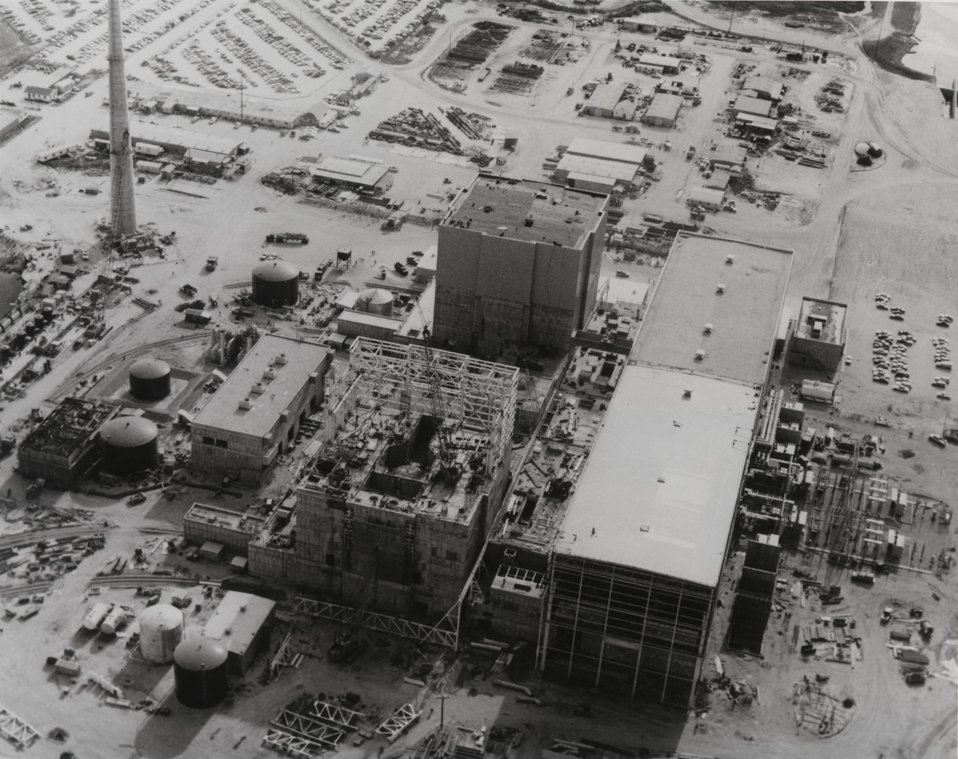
Southport, NC...Brunswick Steam Electric Plant site. Aerial view of the plant showing Unit 1 in the foreground incomplete with the steel work under construction. Unit 2 is in the background.